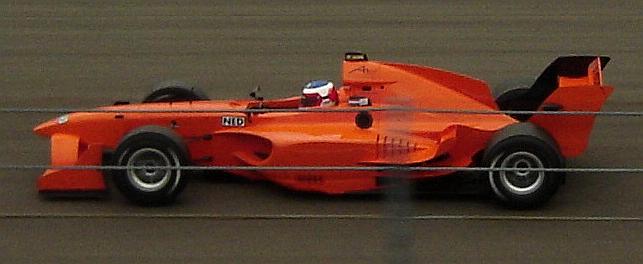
Jeroen Bleekemolen, A1 GP Zandvoort, 1 oktober 2006. Kopie van Image:A1GP NL.JPG, GNU FDL, (eigen werk van Ra-smit), bewerkt.